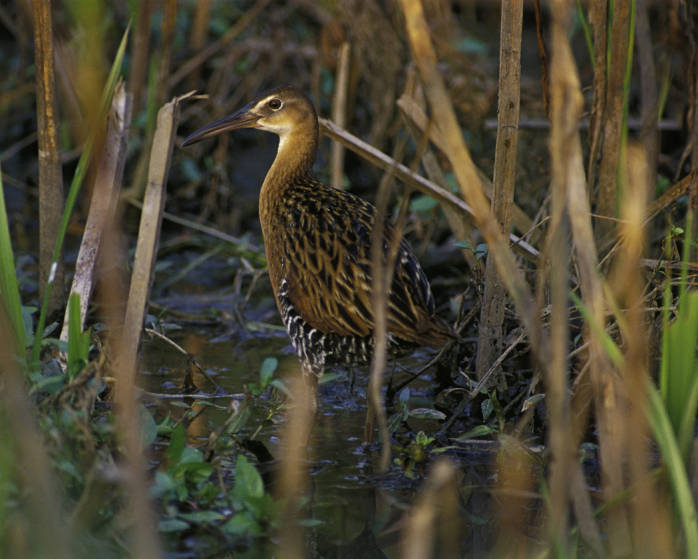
King Rail at Clarence Cannon National Wildlife Refuge